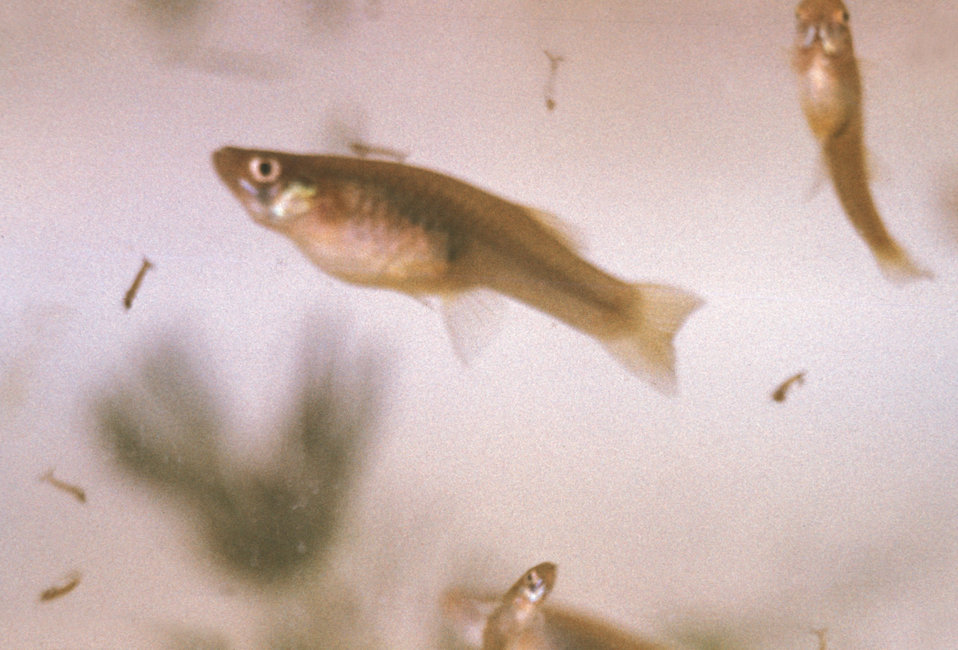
These are 'Mosquito Fish' of the genus Gambusia, native to the Southern United States.